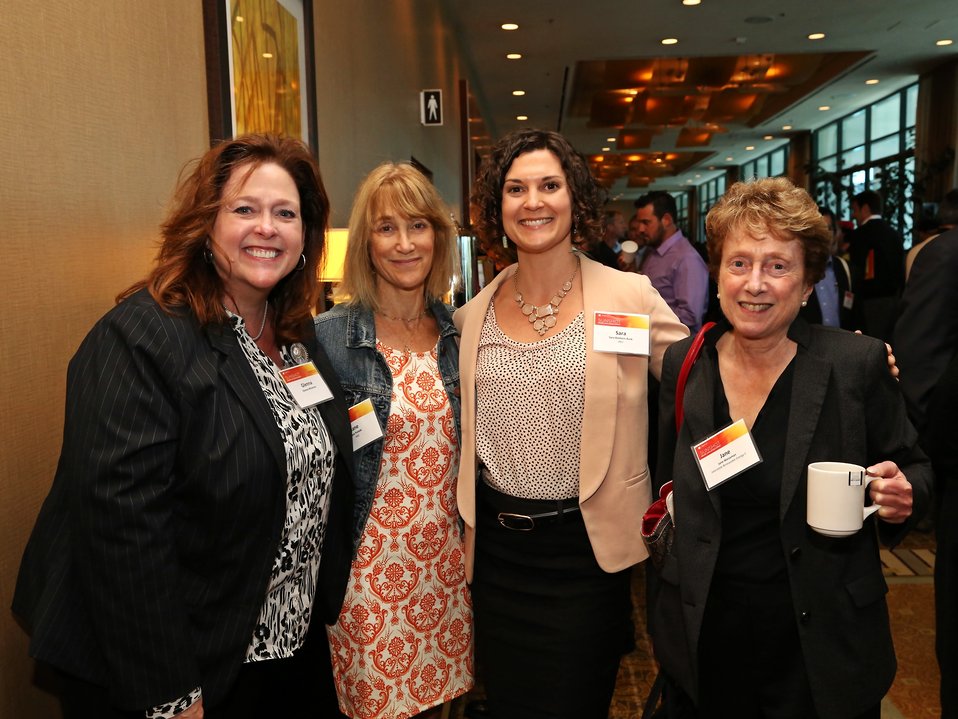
Day 2 Keynote Session 16

Women in solar represented at the summit.